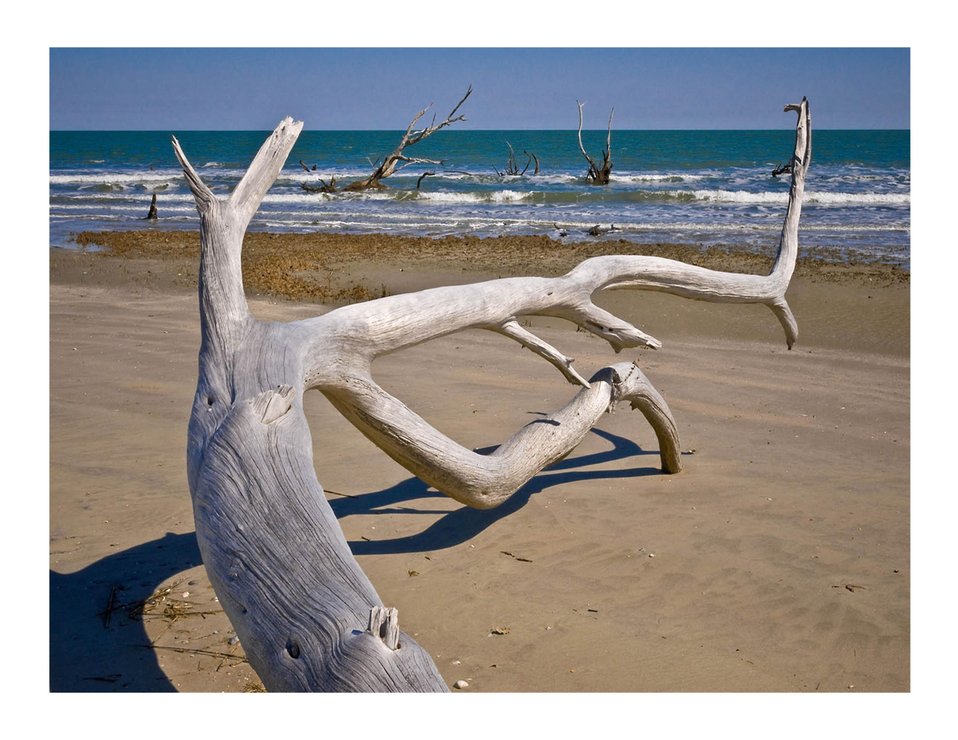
Driftwood on the beach, Louisiana